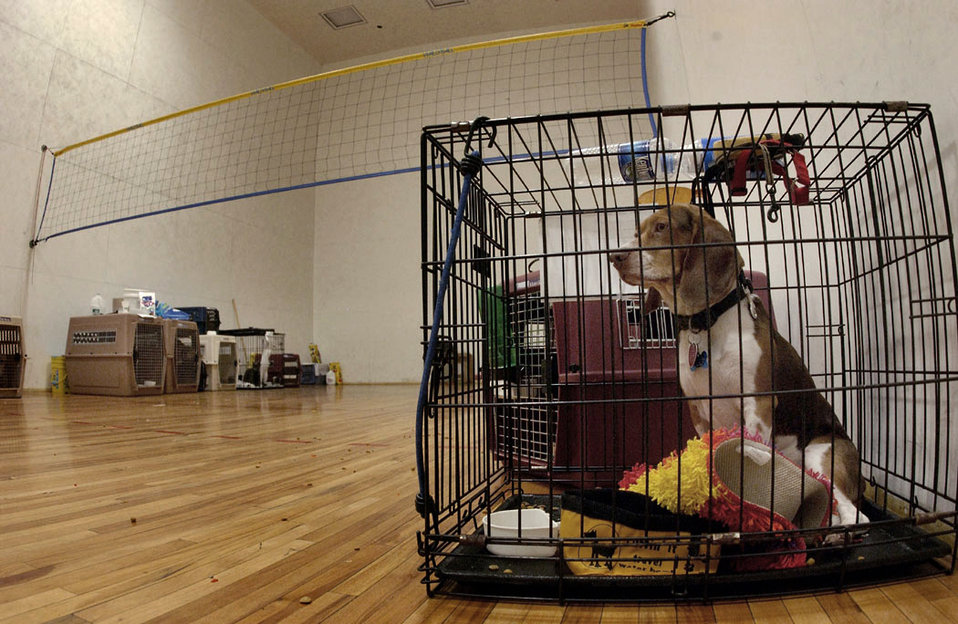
Maxwell AFB serves as staging facility for hurricane operations

MAXWELL AIR FORCE BASE, Ala. -- A Hurricane Katrina evacuee's dog stays sheltered here. The base is serving as a staging facility for hurricane relief operations.